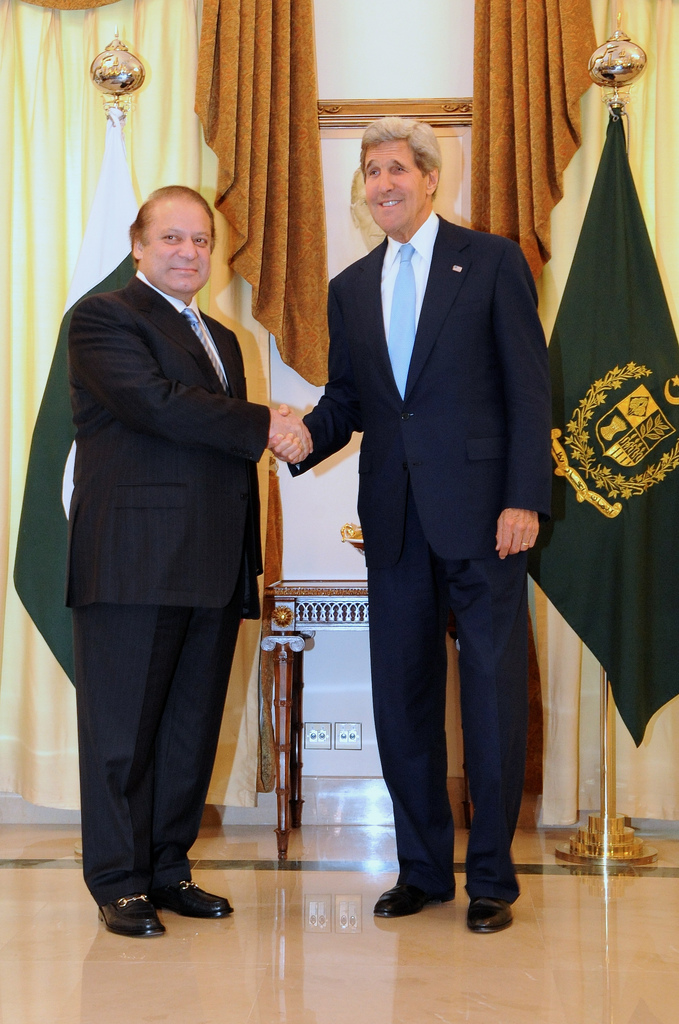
Secretary Kerry Meets With Pakistani Prime Minister Sharif

U.S Secretary of State John Kerry and Pakistani Prime Minister Nawaz Sharif pose for photographers before their meeting in Islamabad, Pakistan, on August 1, 2013.